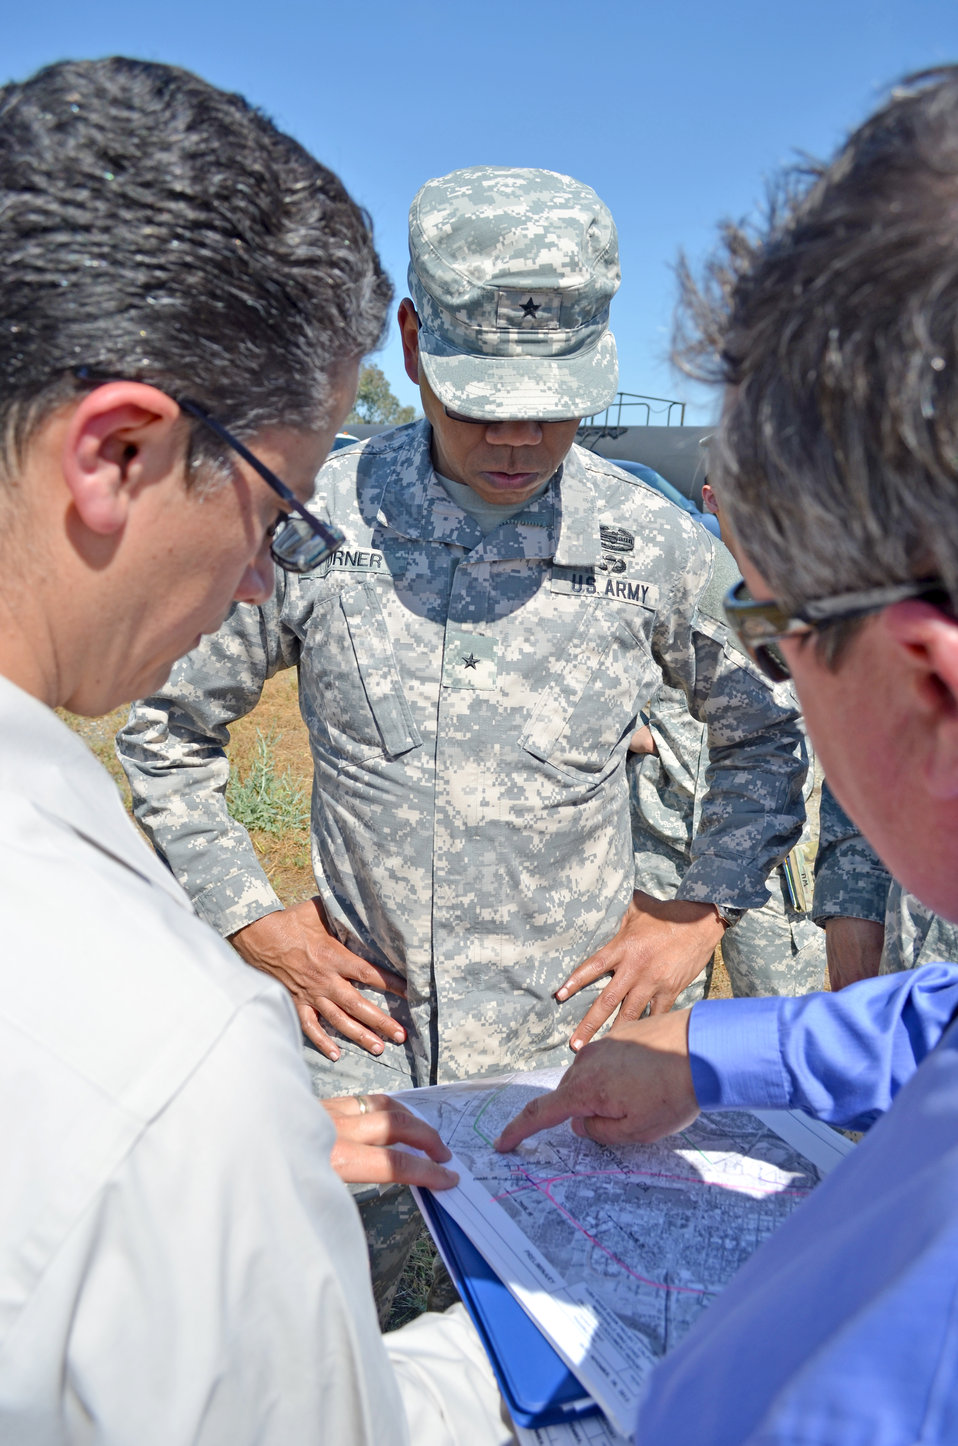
Brig. Gen. David Turner tours Marysville ring levee project

Erik James (right), acting levee safety section chief for the U.S. Army Corps of Engineers Sacramento District, points out where the Corps is working on the Marysville Ring Levee during a project site tour in Marysville, Calif., April 30, 2014. Upgrades to sections of 7.6-mile-long ring levee are designed to help reduce flood risk from the Yuba and Feather rivers for nearly 12,000 residents. The project’s first phase, which built a seepage cutoff wall along a nearly one-mile section of the levee, was completed in 2013.